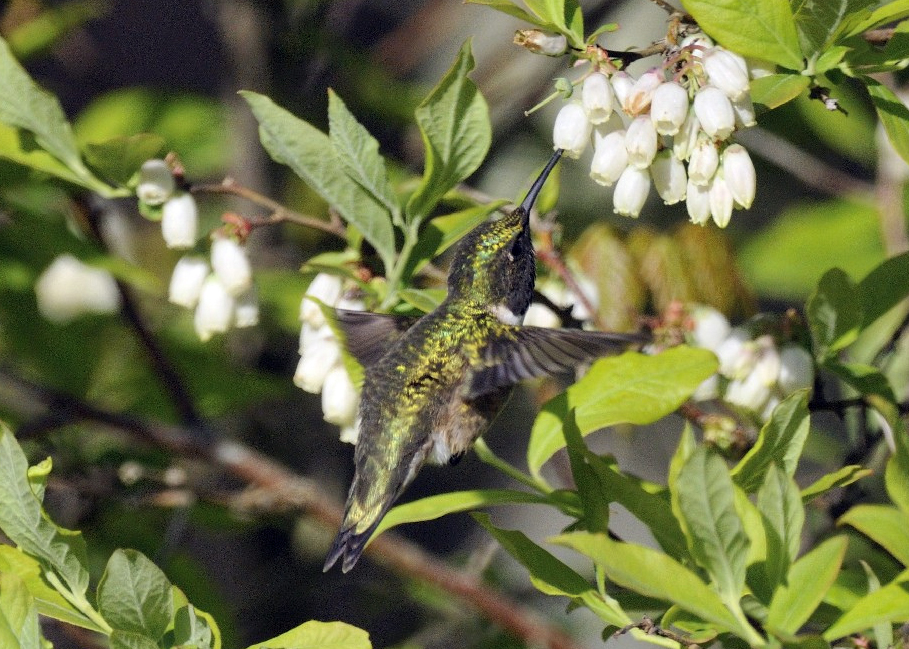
Photo of the Week - Ruby-throated Hummingbird (MA)

Photo of the Week - 5/21/12

Ruby-throated Hummingbird photographed at the Quabbin Reservoir near South Athol, MA.